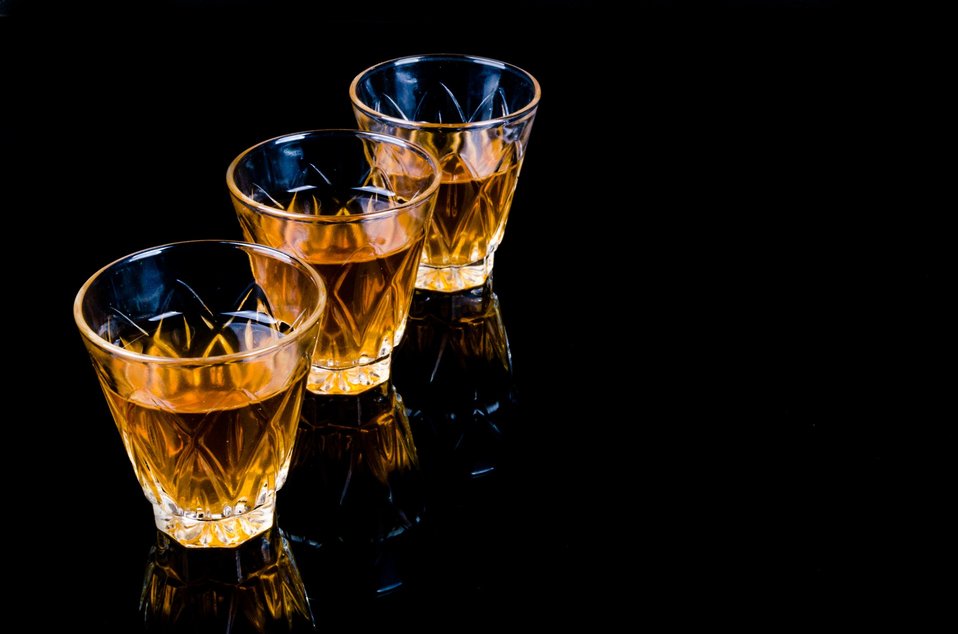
Alcoholic drink in small glasses on the black background.